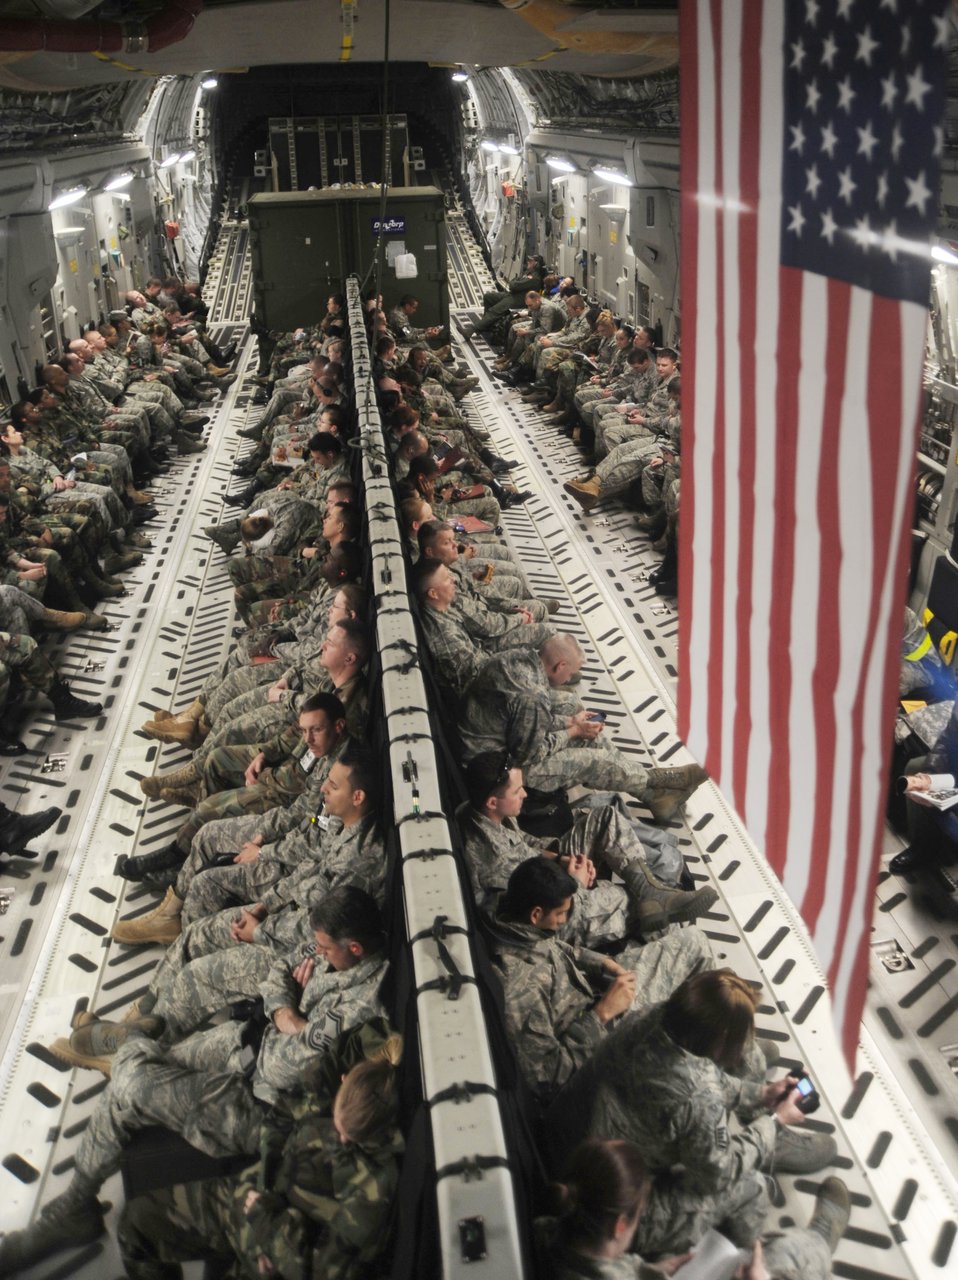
Mission complete

In a C-17 Globemaster III, Airmen from the 375th Airlift Wing return home May 17, 2009, to Scott Air Force Base from Volk Field, Wis. Active-duty, Air National Guard and Reserve Airmen were at Volk Field to participate in a week-long training exercise in preparation for an operational readiness inspection next year.